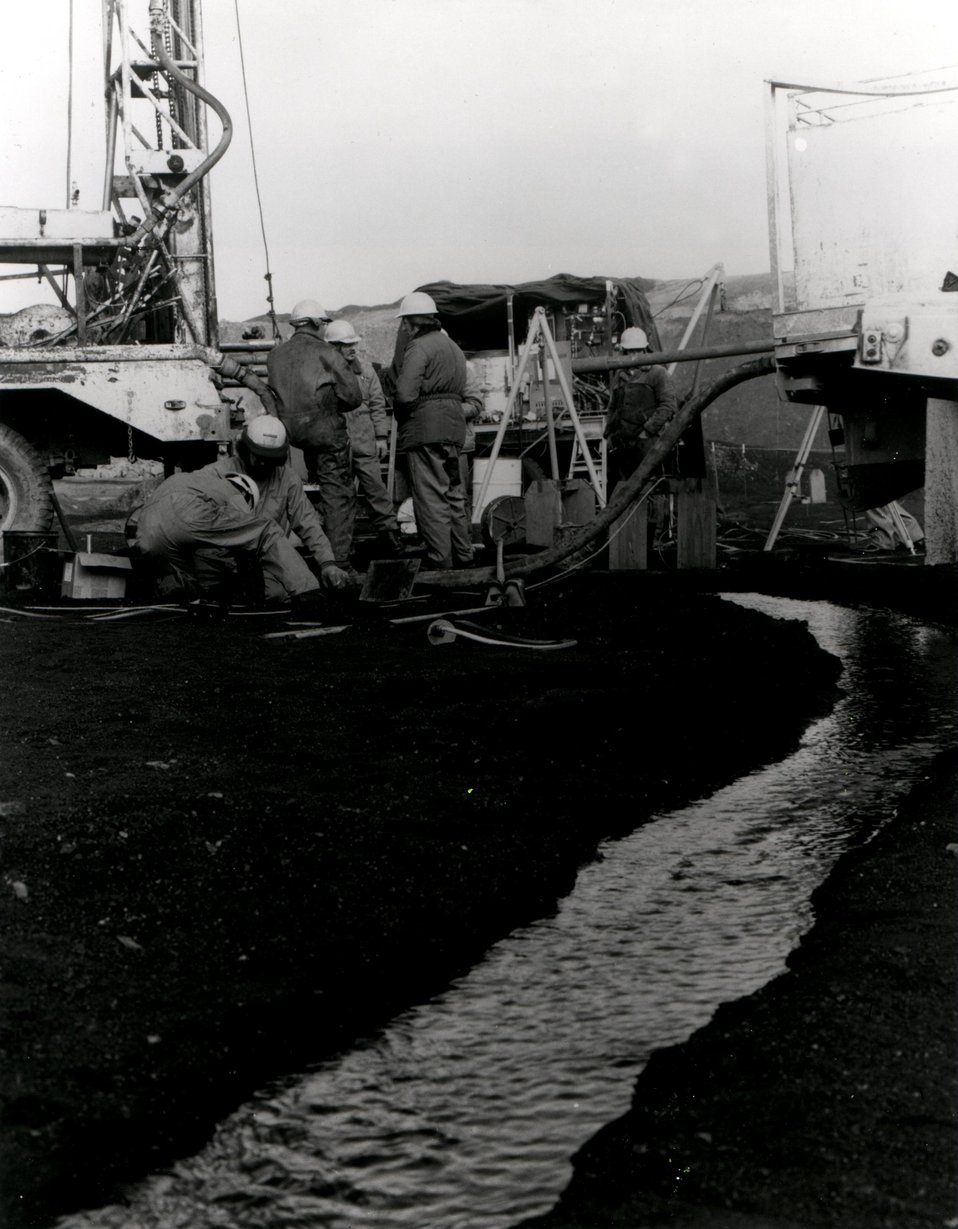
Engineers drill a hole into a coal deposit at the Kemmerer Coal Company mine in Kemmerer, Wyoming, in an experiment conducted for the Energy Research and Development Administration by the Lawrence Livermore Laboratory. Circa 1975.